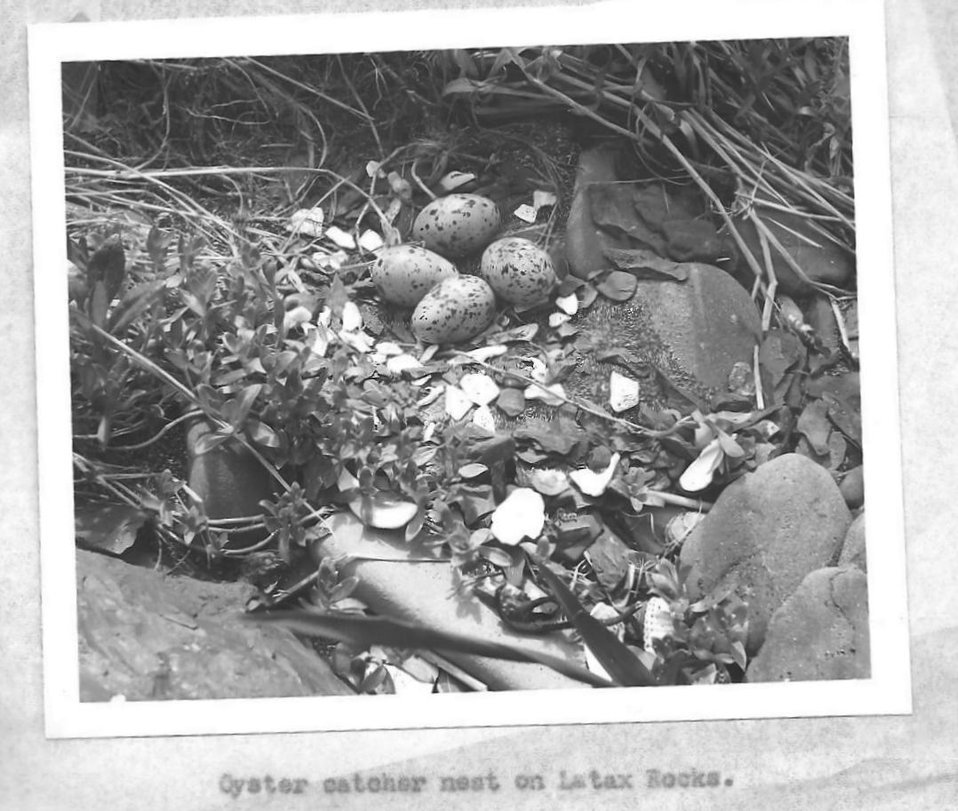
(1957) Oyster Catcher Nest

Credit: USFWS

Source and Contact: Kodiak National Wildlife Refuge